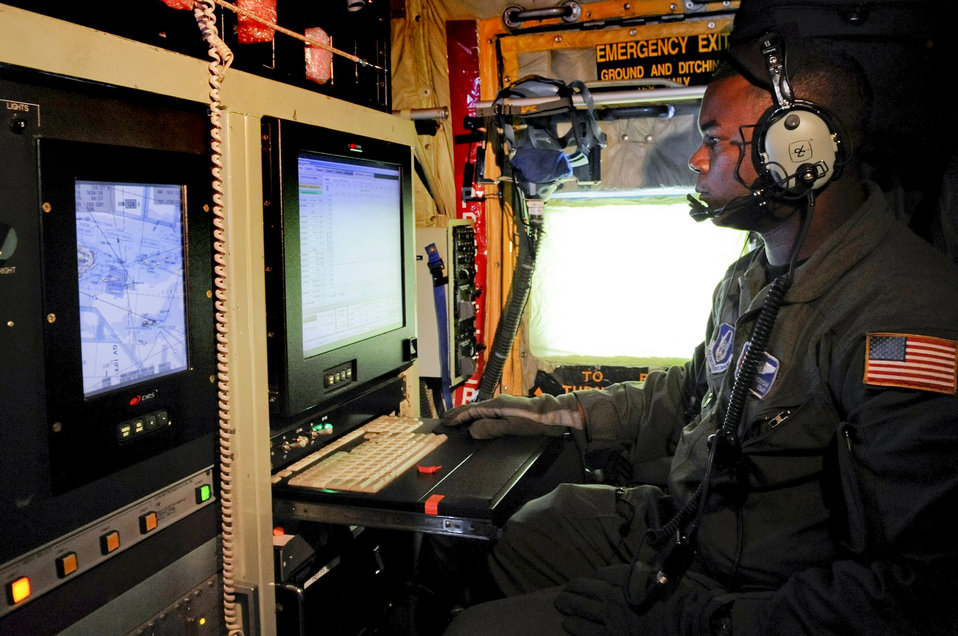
Training with the

Tech. Sgt. Troy Bickham flies in a training mission June 6 to St. Croix, V.I. on a WC-130J Hercules from Keesler Air Force Base, Miss. Sergeant Bickham is a weather systems loadmaster assigned to the 53rd Weather Reconnaissance Squadron. The training mission prepares the squadron Airmen as they enter hurricane season, which began June 1.